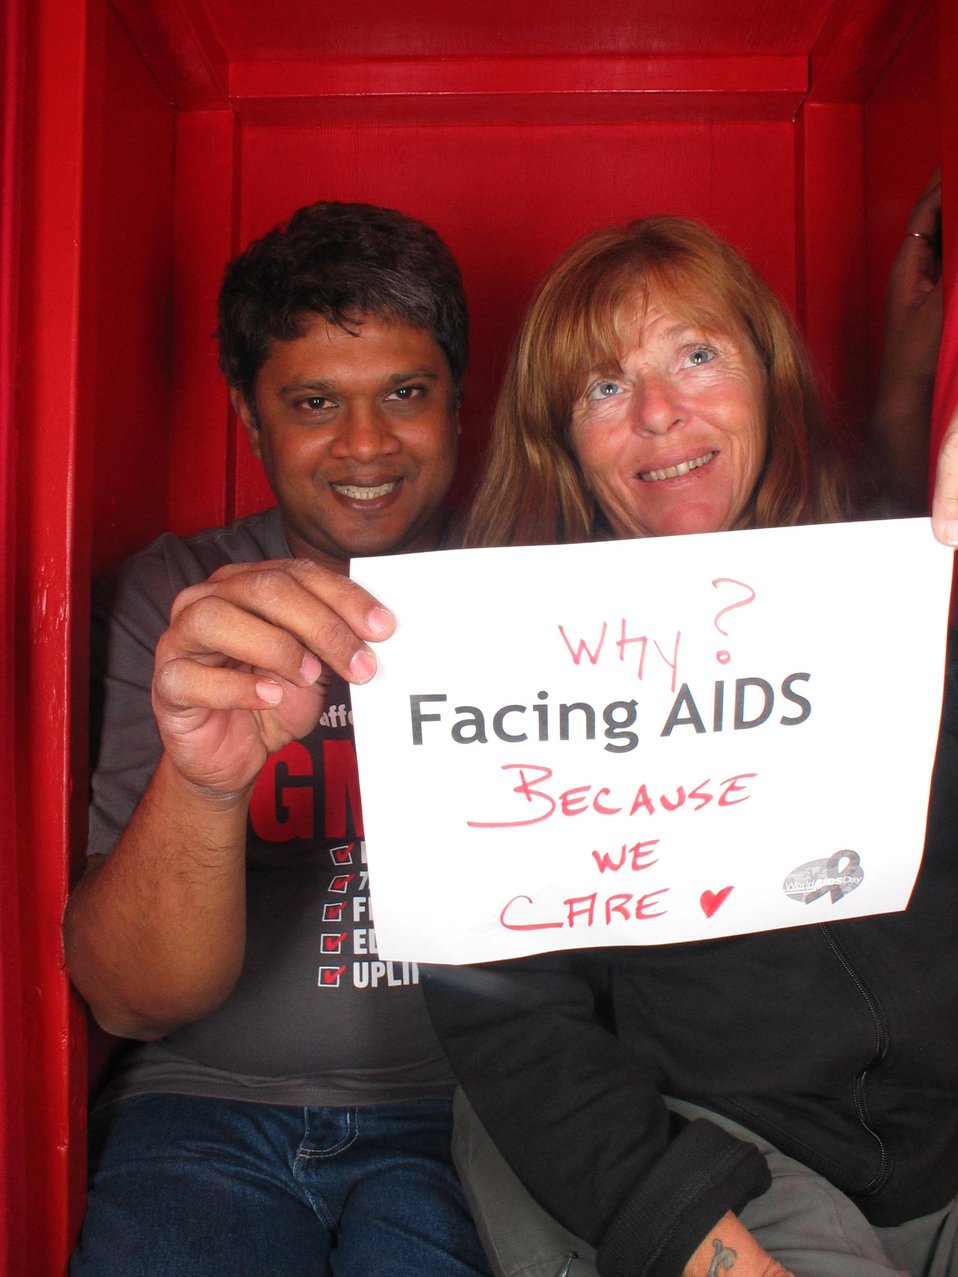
Why? Facing AIDS Because we care.